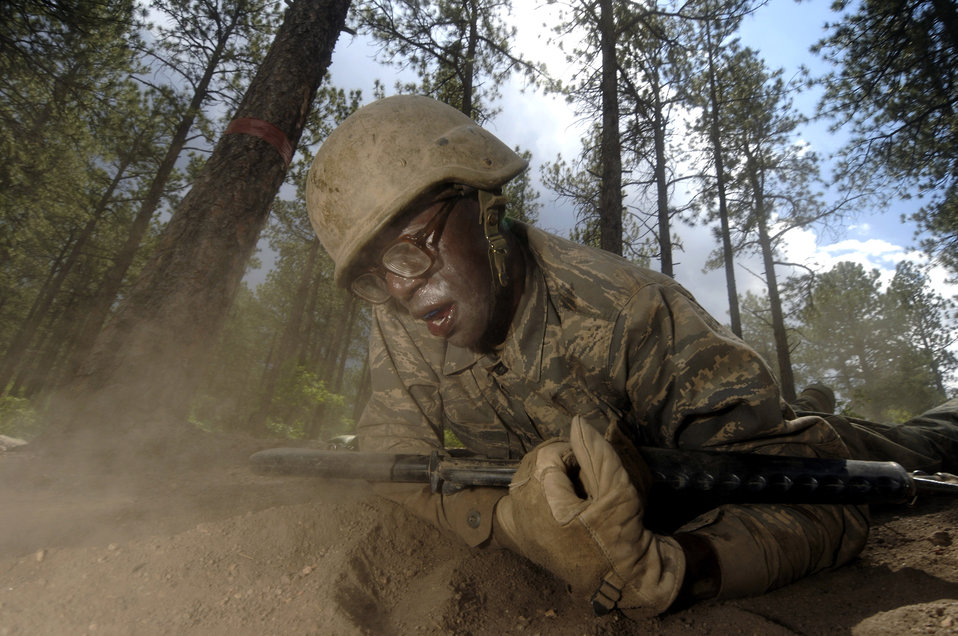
Need fresh air...

U.S. Air Force Academy Basic Cadet Michael Provost low crawls a section of the assault course July 25 during basic cadet training in the Jacks Valley training area near Colorado Springs, Colo.